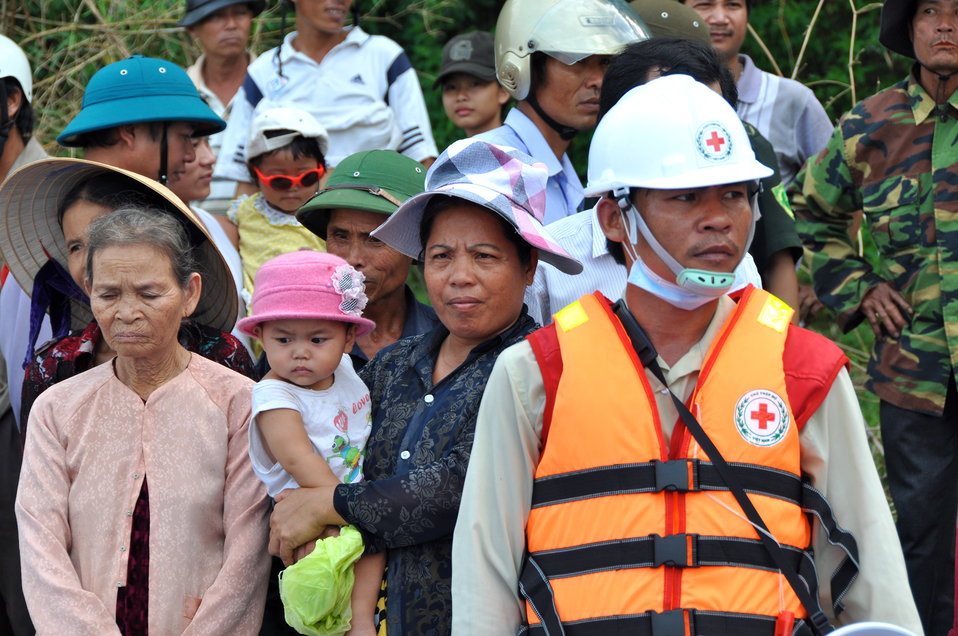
USAID, Red Cross Support Disaster Response Drill in Duy Hoa Commune, Quang Nam Province

Duy Hoa Commune, Quang Nam Province
December 5, 2012